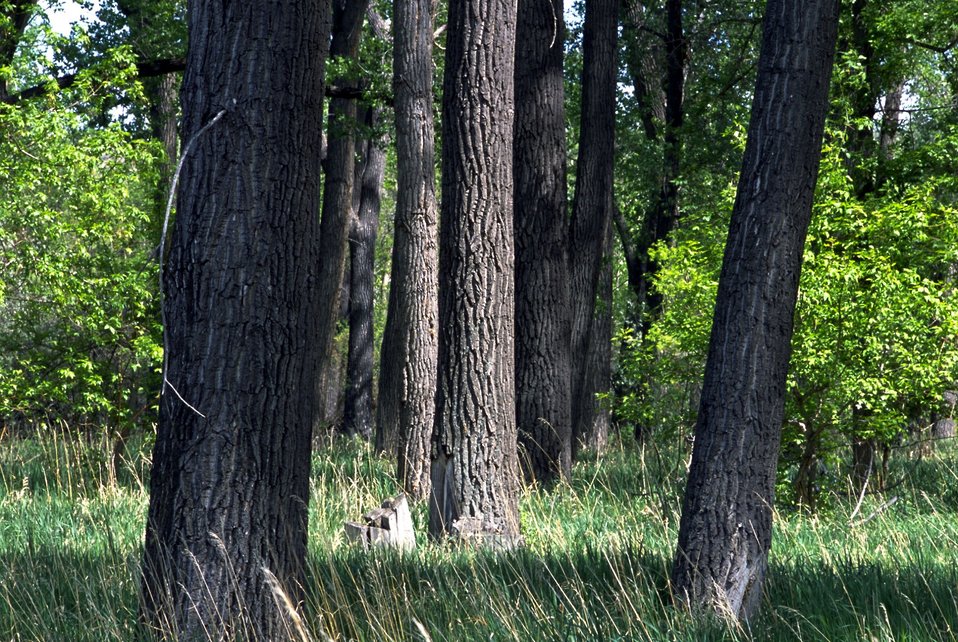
Cottonwood grove along the Clark's Fork of the Yellowstone River in the Sundance Lodge Recreation Area